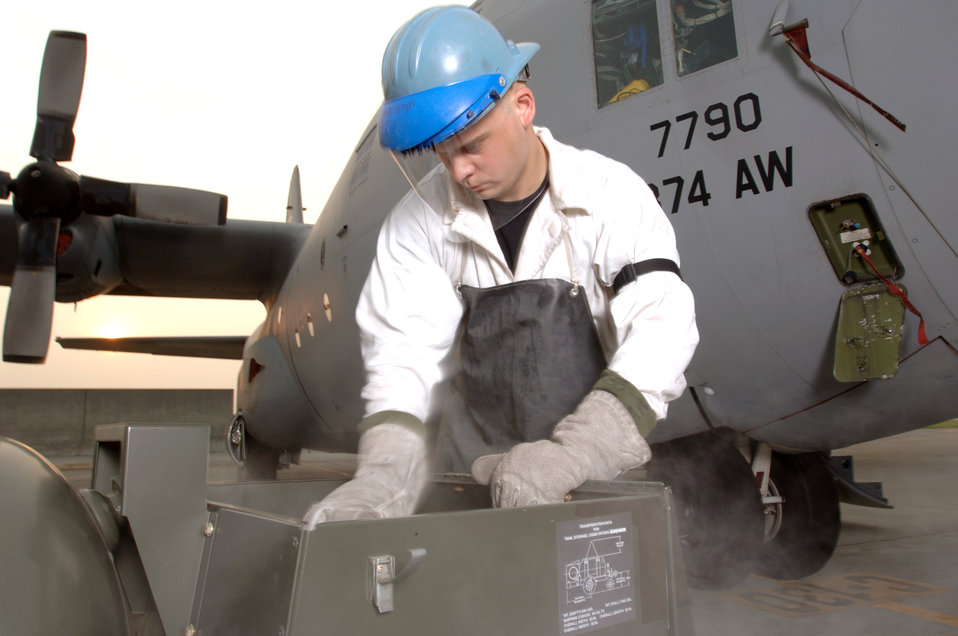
Breathe a little easier

YOKOTA AIR BASE, Japan -- Senior Airman Travis Hutts uses a liquid oxygen cart to service a C-130 Hercules. Liquid oxygen is used by aircrews to help them breathe at high altitude. Airman Hutts is a crew chief with the 374th Maintenance Squadron here.